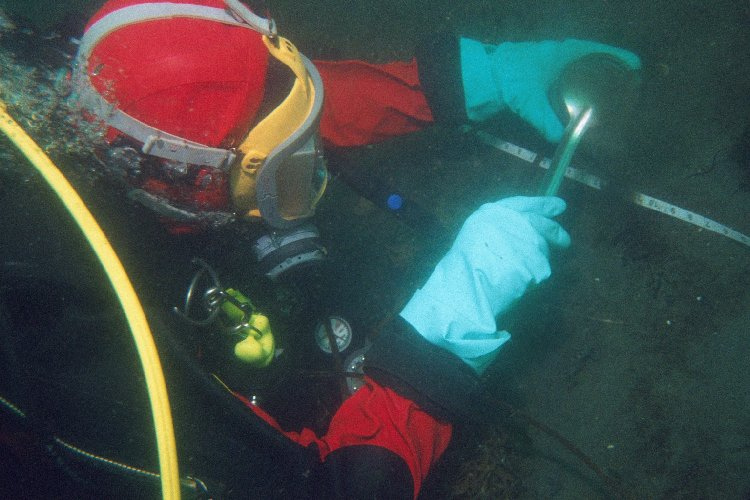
(Earlier photo) April 2011, EPA Diver collects sediment sample Wycoff Superfund Site

EPA Region 10 Diver collects a surface sediment sample near a treatment plant outfall for chemical analysis. EPA divers conducted sampling of sediment near the outfall to determine if low level contaminants would pose a hazard to humans or aquatic life. For more information about EPA work visit: www.facebook.com/EPAdivers

For more details on these dives, see: www.epa.gov/region10/pdf/diveteam/wyckoff superfund site ...
yosemite.epa.gov/r10/OEA.NSF/3cf2477404154c6988256bdc0076...

In this photo: EPA Region 10 diver Bruce Duncan, photo by EPA Region 10 diver Sean Sheldrake